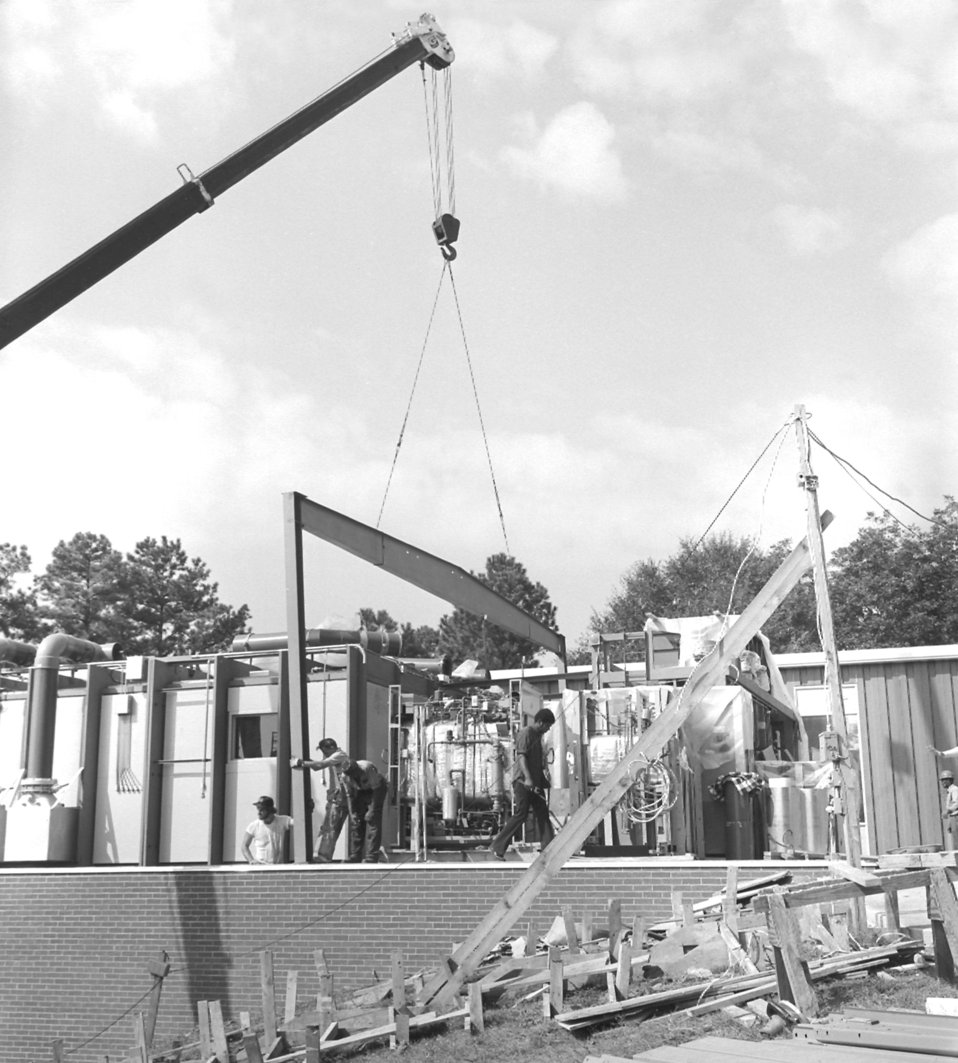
Early construction of Centers for Disease Control and Prevention buildings, Clifton Road Offices, Atlanta, GA.